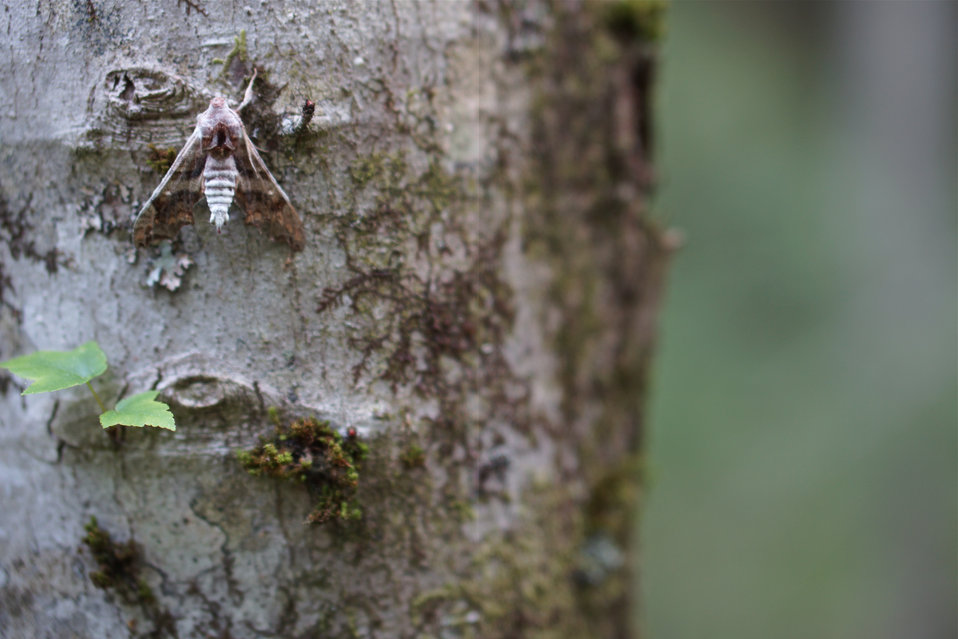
Moth on a tree trunk

In May, bog conservationists from Tennessee, North Carolina, and Georgia convened in the north Georgia mountains for the spring, 2014 meeting of the Bog Learning Network. The event provided an opportunity for biologists to see, first hand, the result of management efforts at two north Georgia bogs. More importantly, the outings provided an opportunity to share innovative approaches to bog management, such as the role of the Georgia Plant Conservation Alliance in conserving rare plants and coordinating a cadre of volunteers to work on bog management.

The Bog Learning Network was convened in the winter of 2013 as a way to bring together people working for bog conservation across the Southern Appalachians. Southern Appalachian bogs are one of North America’s rarest habitats and home to many rare plants and animals.